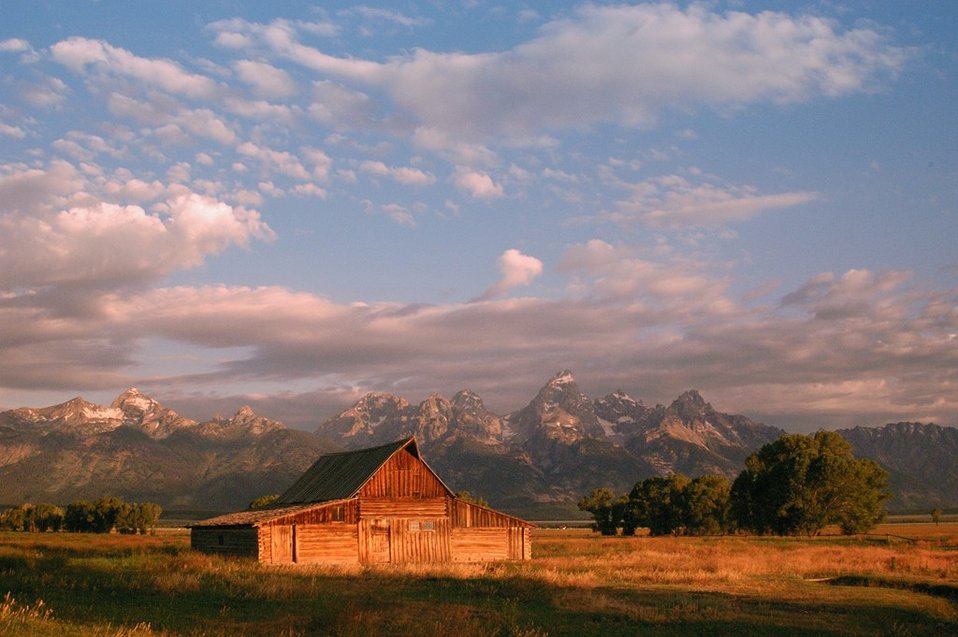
Uploaded by request of Bruce Kamplain.

Taken in Wyoming.

A majestic mountain range always seems to capture our attention – as either something to cross or something to admire for its beauty. This photograph of the Grand Tetons was taken just as the sun was peaking out over the range to the east. The sky, clouds, barn, meadow and mountains completes a wonderful image of hope and new beginnings.